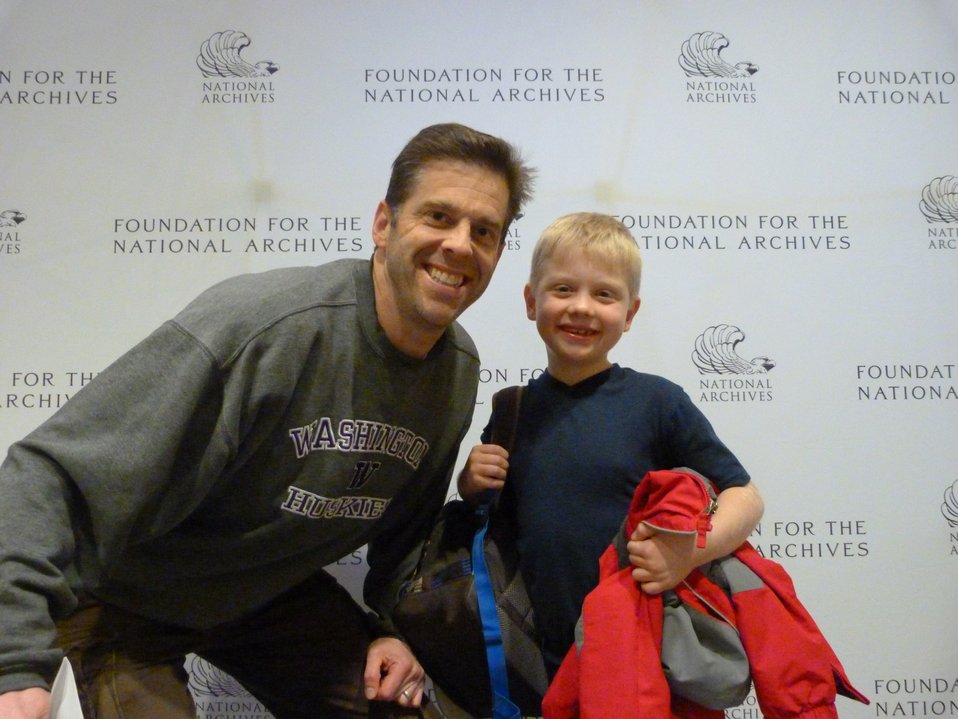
Rotunda Sleepover

Rotunda Sleepoverr; Photo provided by The Foundation for the National Archives